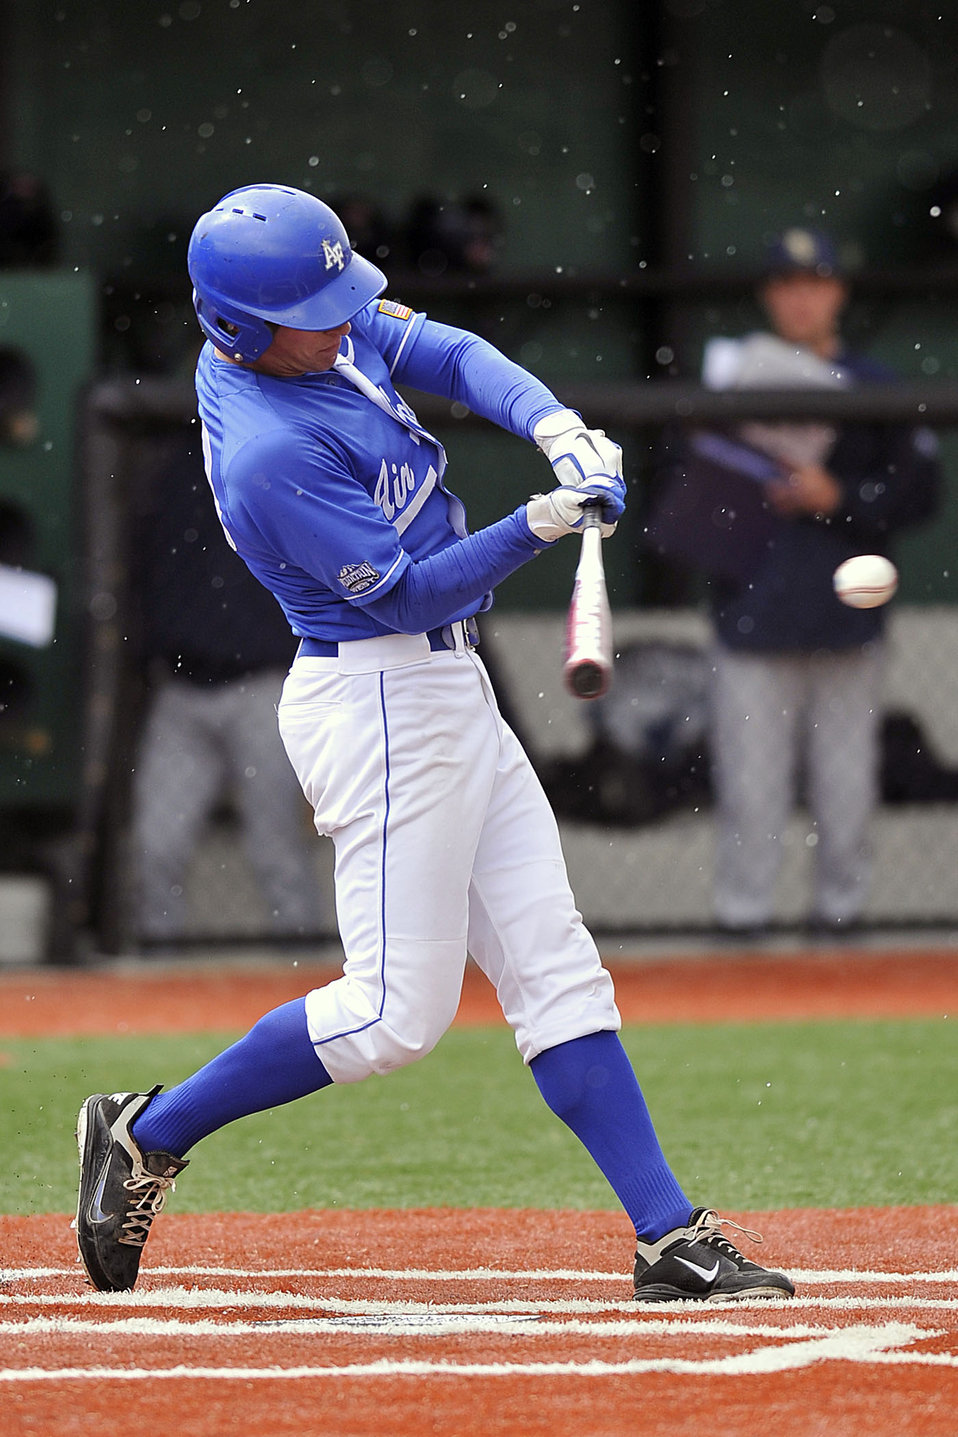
Falcons vs. Bears

Air Force Academy Falcons sophomore left fielder Alex Bast connects with a pitch against the Northern Colorado Bears April 19, 2011, at Falcon Field in Colorado Springs, Colo. Bast continued to swing a hot bat, leading the team with a 3-for-4 performance, which included two doubles and two runs scored. The Bears took the lead in the top of the ninth with a two-run blast, lifting them over the Falcons 6-5.